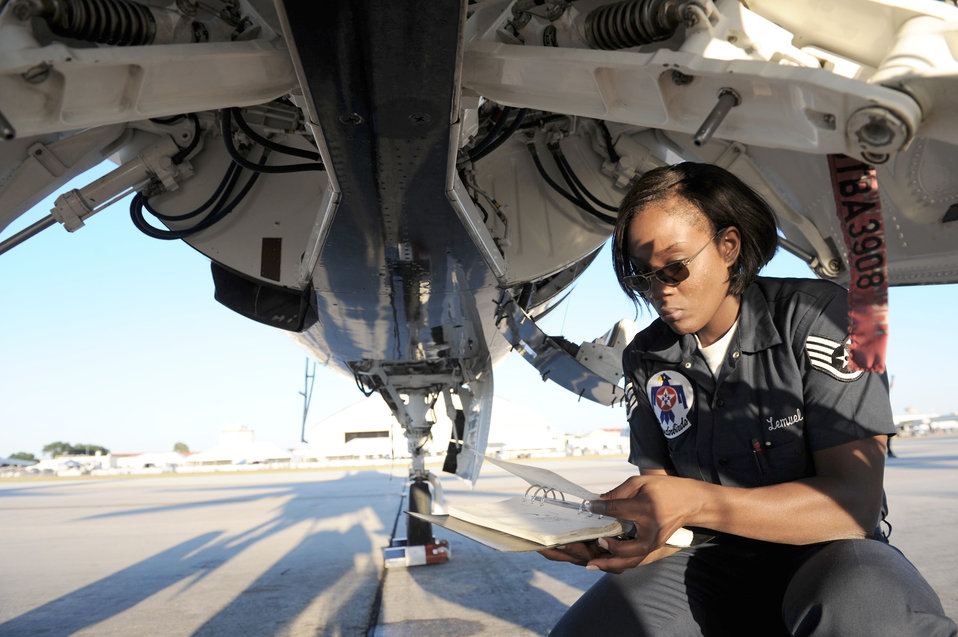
Thunderbirds at Lackland

Following the Thunderbirds aerial demonstration at the AirFest 2010, Staff Sgt. Tacota Lemuel reviews her maintenance checklist during post-flight maintenance Nov. 7, 2010, at Lackland Air Force Base, Texas. Sergeant Lemuel is a Thunderbird crew chief.